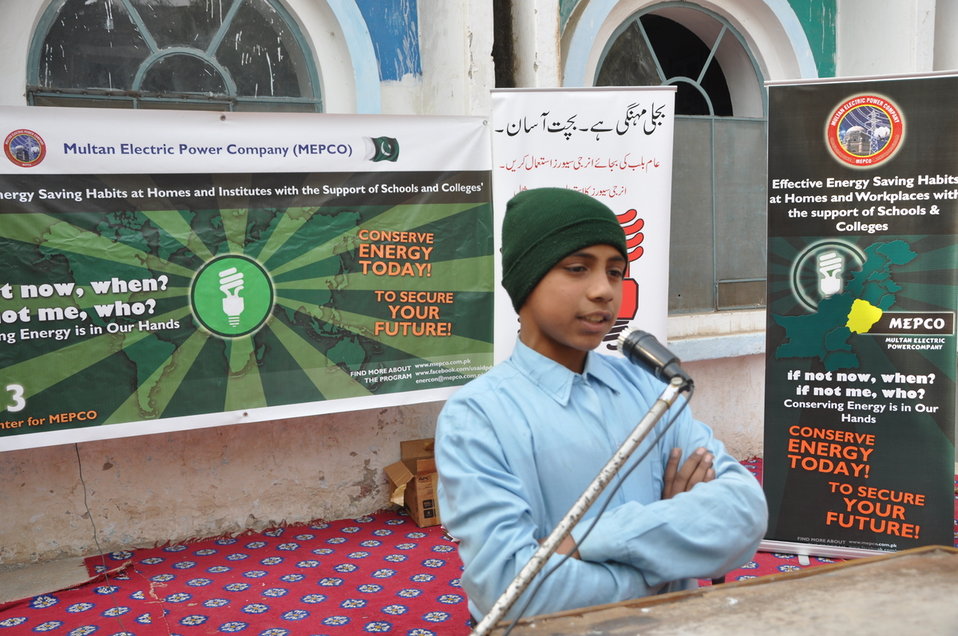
USAID Power Distribution Program-Energy Conservation Seminar at Govt. Bukhari Public School for Boys, Multan.

Multan, January 12, 2013-The student of Bukhari Public School for Boys, Multan, reciting the holy Quran in the start of seminar